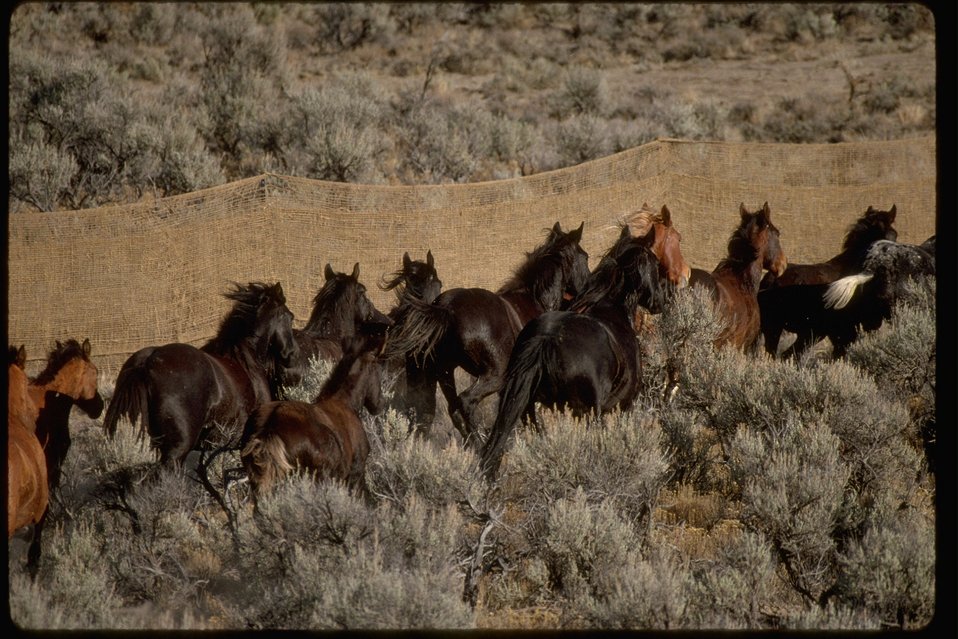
Wild horses entering trap on the Warm Springs Herd Management Area in the Burns District, Oregon.